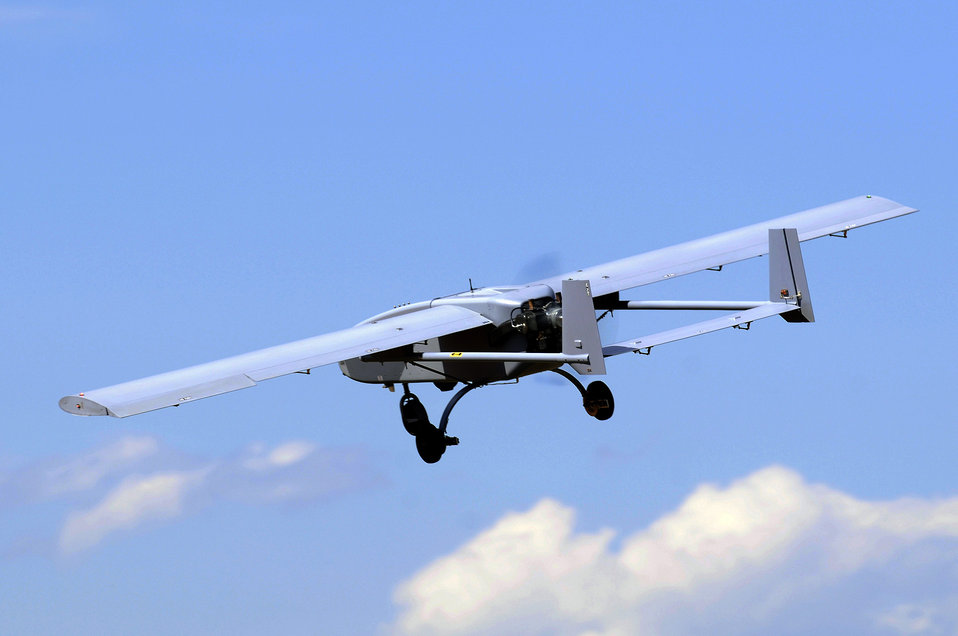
Academy officials add unmanned aircraft system into curriculum

The U.S Air Force Academy's unmanned aircraft systems Viking 300 aircraft flies July 22 over Fort Carson, Colo.